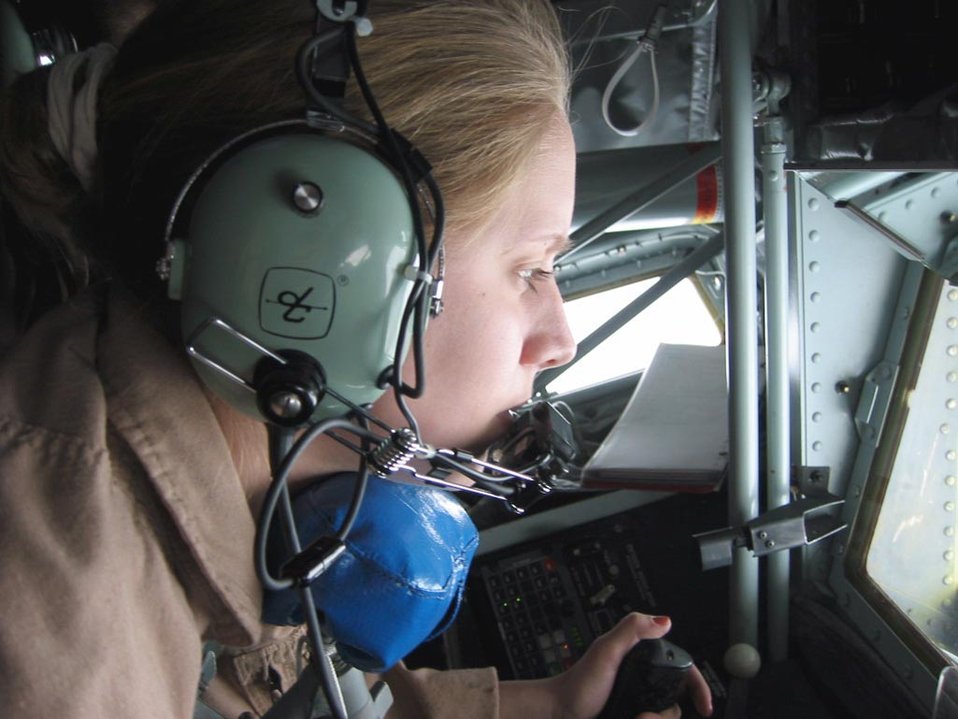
Boom operator

OPERATION ENDURING FREEDOM -- Senior Airman Lyndi talks to F-16 pilots from the European participating air forces as she prepares to refuel their aircraft during an air refueling mission over Afghanistan. Lyndi is a KC-135 Stratotanker boom operator currently assigned to the 376th Expeditionary Air Refueling Squadron at Ganci Air Base, Kyrgyzstan. She was part of an all-female crew that flew Jan. 31.